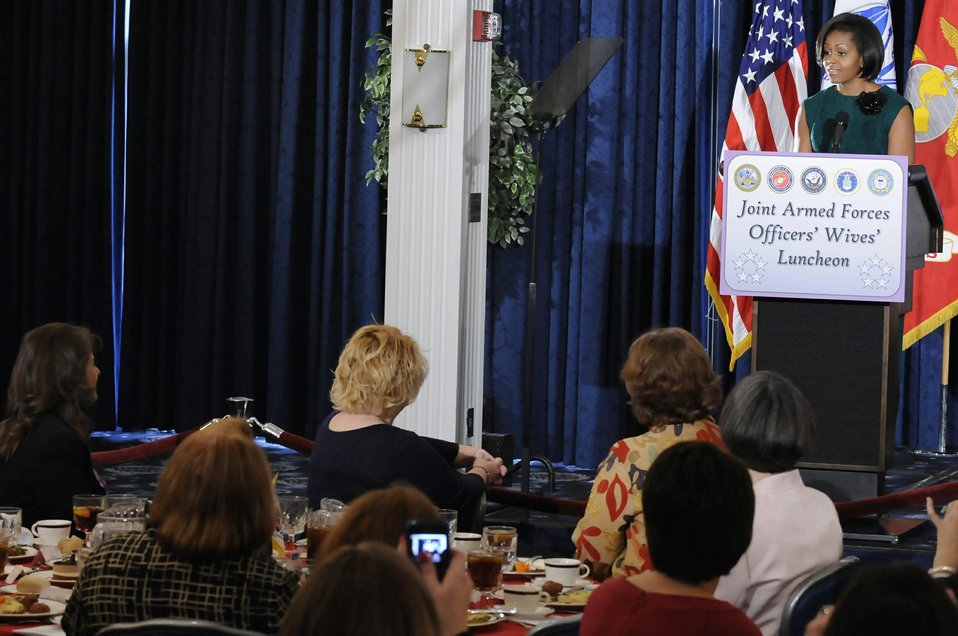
First lady's priority: Taking care of military families

First Lady Michelle Obama speaks at the Joint Armed Forces Officers' Wives Club 32nd annual luncheon Jan. 26, 2010, at Bolling Air Force Base, D.C. Since the organization's beginning in 1977, the officers' spouses' clubs from the five military services in the Washington area form a coordinating committee to arrange the annual event.